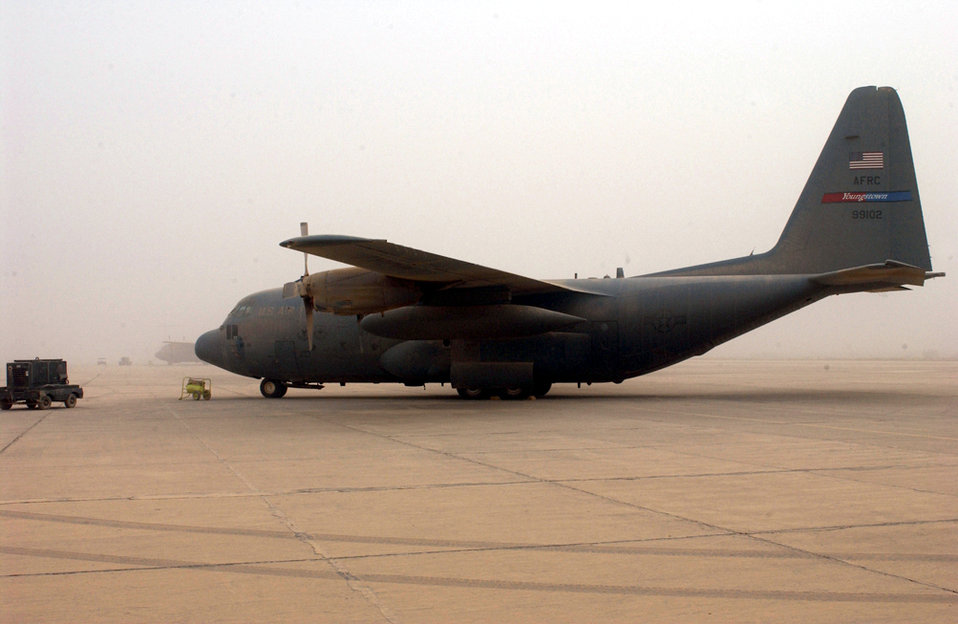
Desert dust in the wind

BAGHDAD, Iraq -- A C-130 Hercules sits grounded because of poor visibility from an overnight sandstorm that brought 40 mph winds and a blanket of dust here recently. The C-130 is assigned to the 910th Airlift Wing in Youngstown, Ohio.